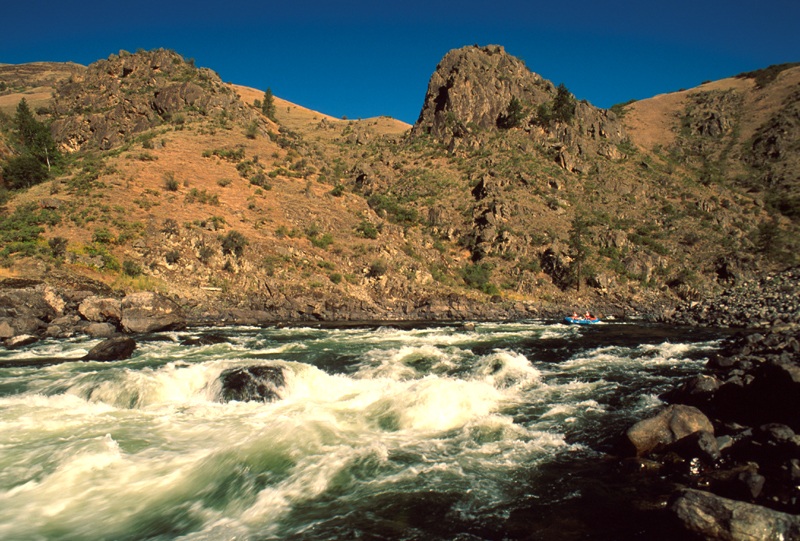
Rafting Lower Salmon River Cottonwood Field Office UCSC Upper Columbia-Salmon Clearwater District